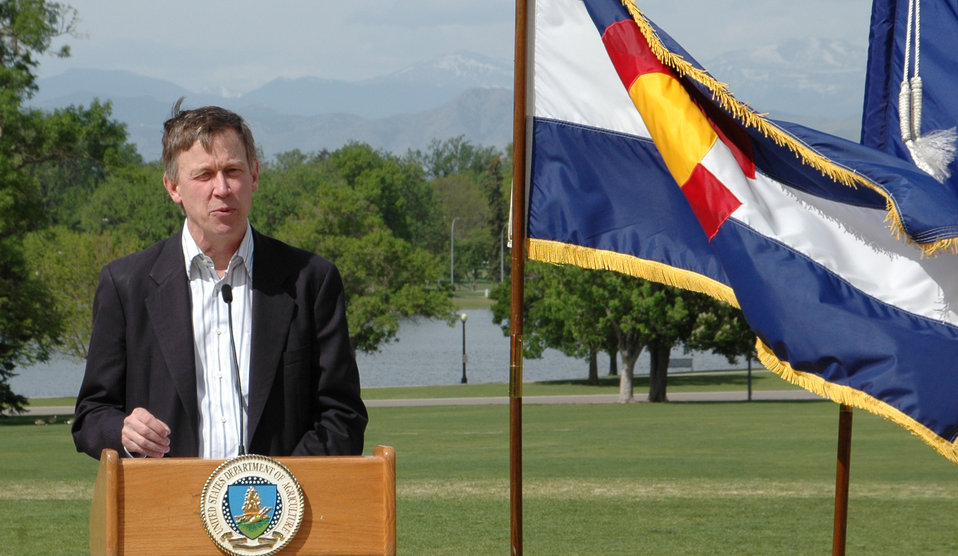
Colorado Governor John Hickenlooper speaking at a press conference for the Colorado Roadless Rule announcement in Denver Colorado on Wednesday, May 2, 2012.